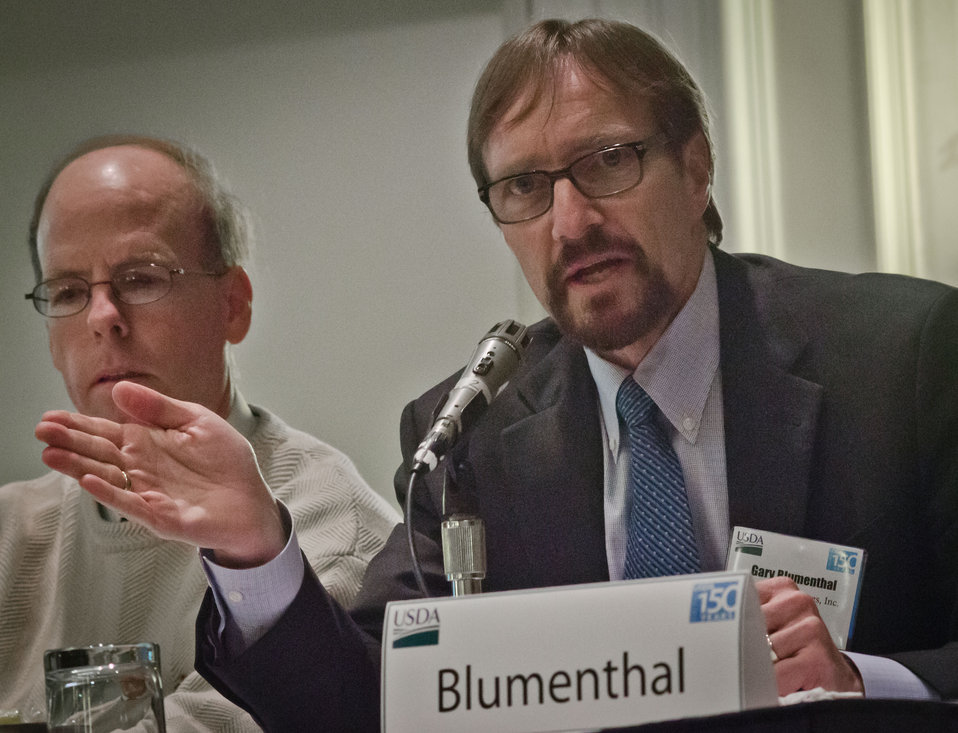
Agriculture Economic Research Service Economist Timothy Park (left); and World Perspectives, Inc. President and moderator Gary Blumenthal (right) take turns responding to a question, during “The Farm Income Outlook for 2012” session of the Food Prices & Farm Income Track, at the 2012 Agricultural Outlook Forum, “Moving Agriculture Forward, Growing, Innovating and Celebrating 150 Years.” held at the Crystal Gateway Marriott Hotel, Arlington, Virginia, Friday, February 24, 2012. The session focused on general measures of the financial well being of the farm economy, including USDA’s official outlook for farm income, the distribution of income across farm households, and the competitiveness of the rural economy.